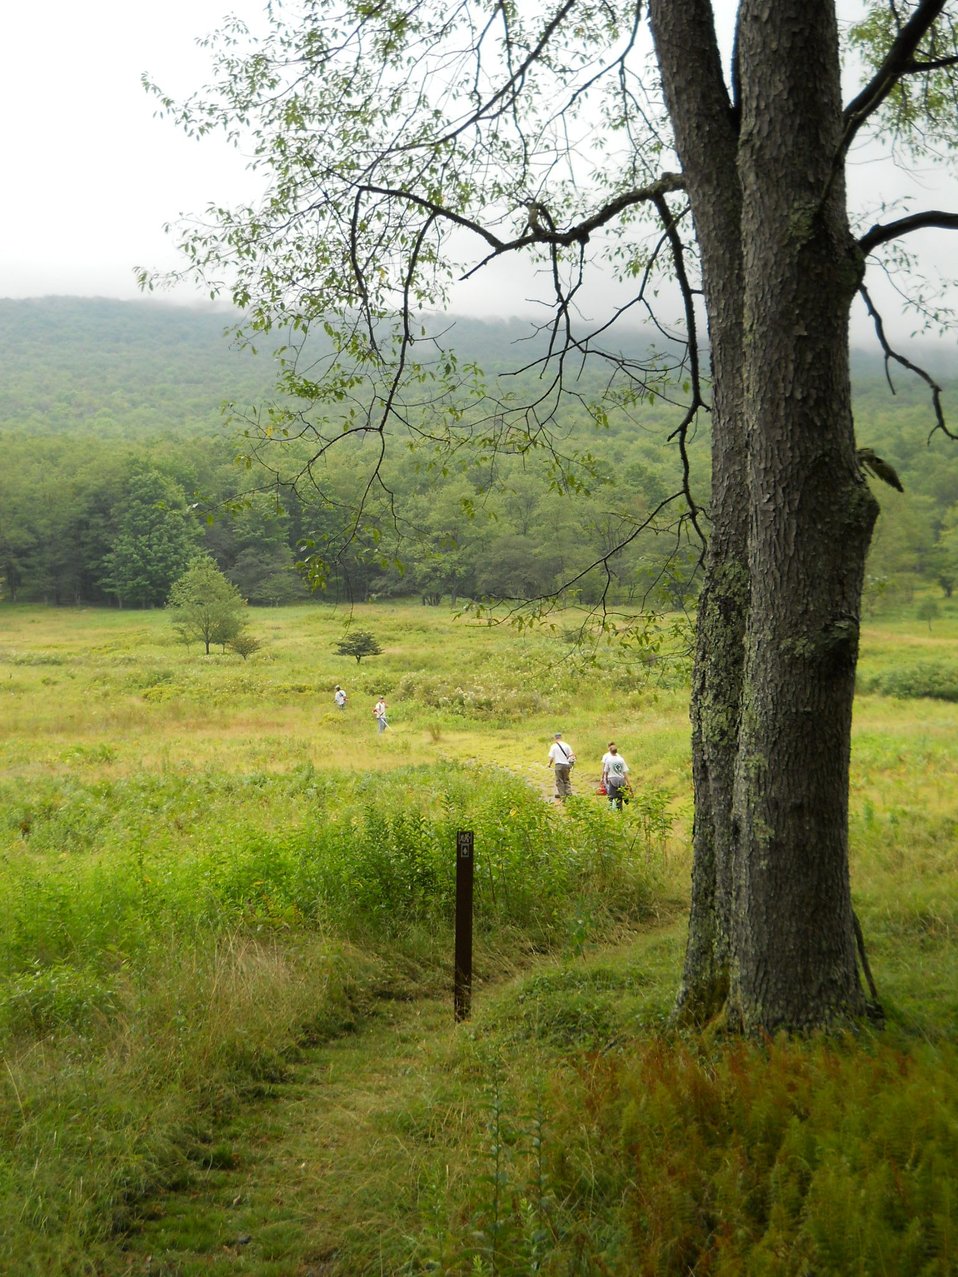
YCC students performing trail maintenance, Canaan Valley Refuge